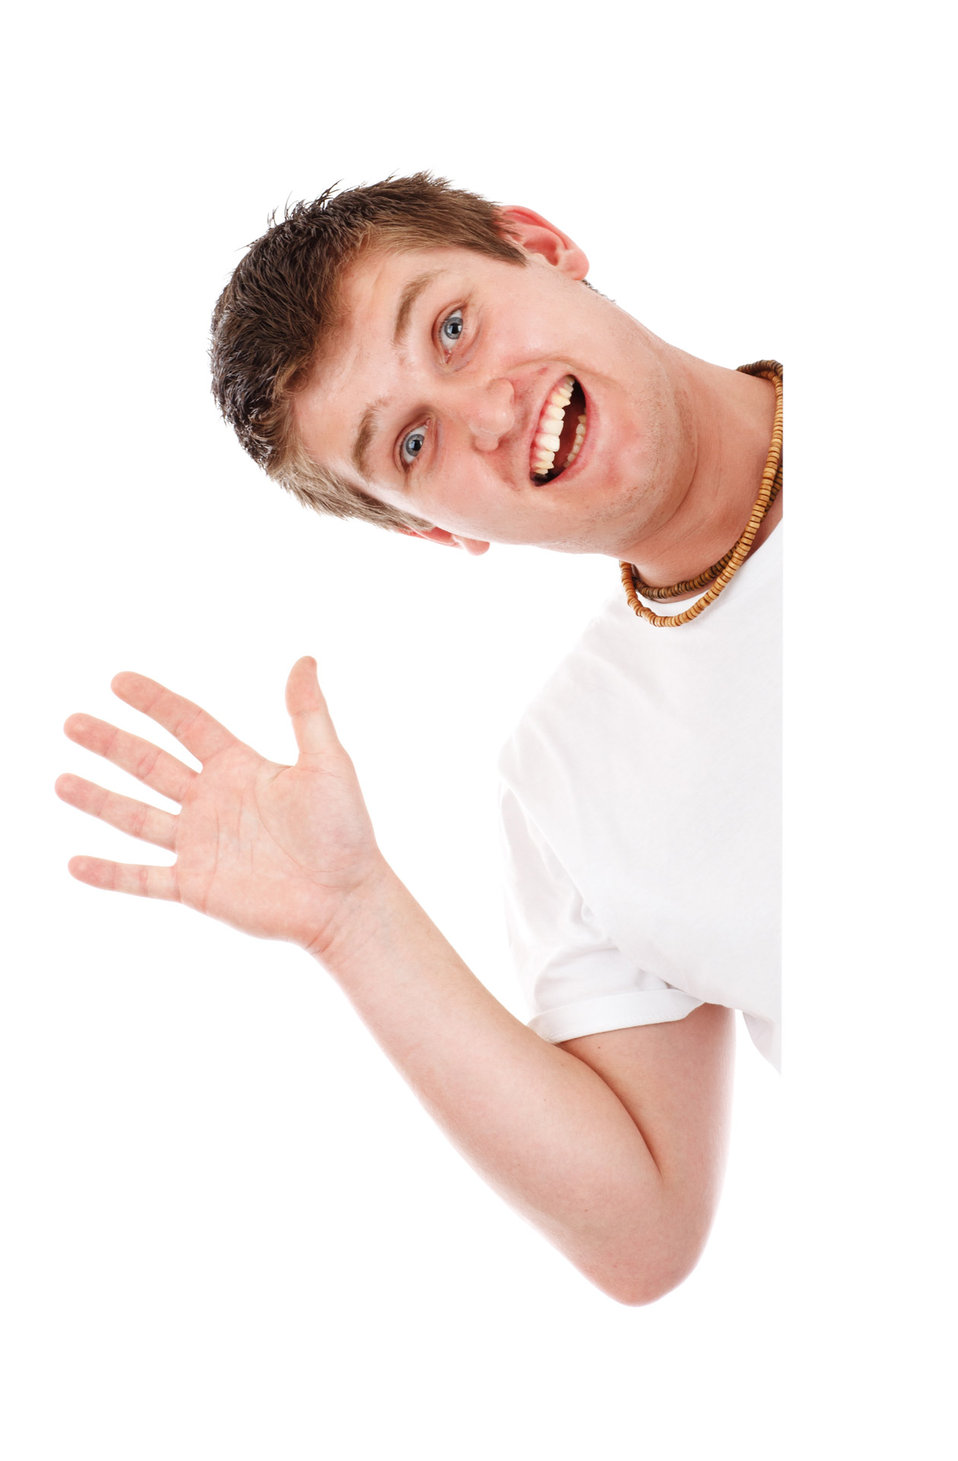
Man waiving

Young man waiving from behind a white board.